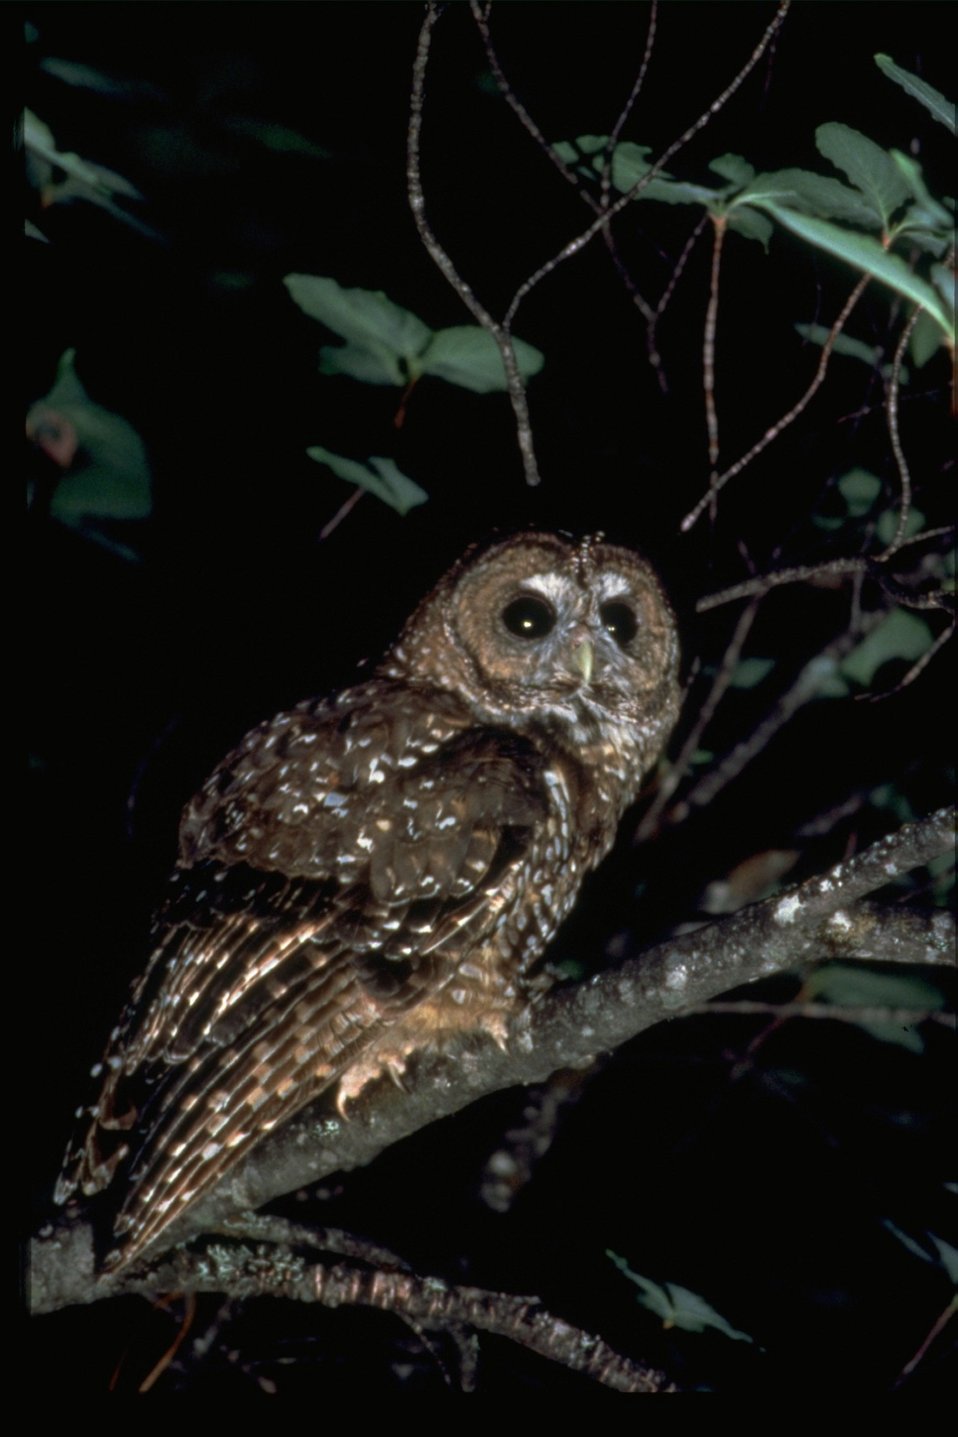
A spotted owl perched on a branch.